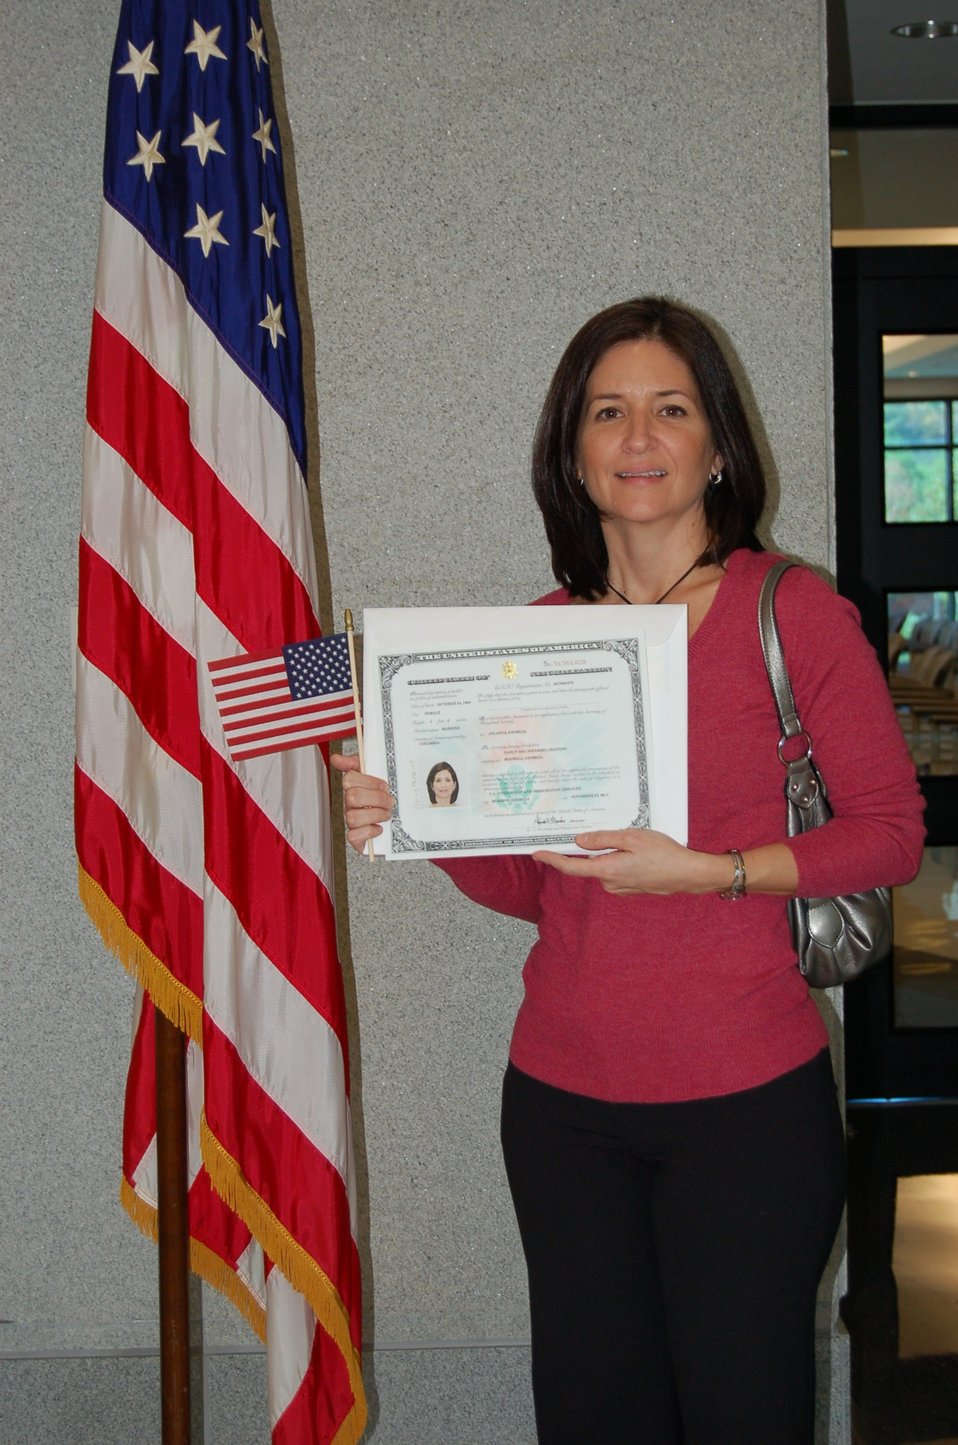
New Citizens